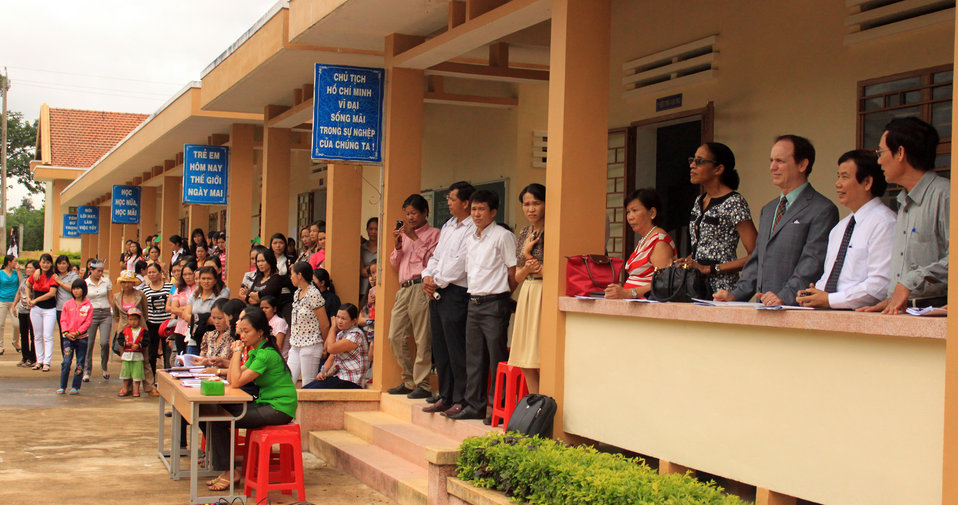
USAID Mission Director Francis Donovan joins local teachers as they practice what they learned from USAID-funded intensive training courses